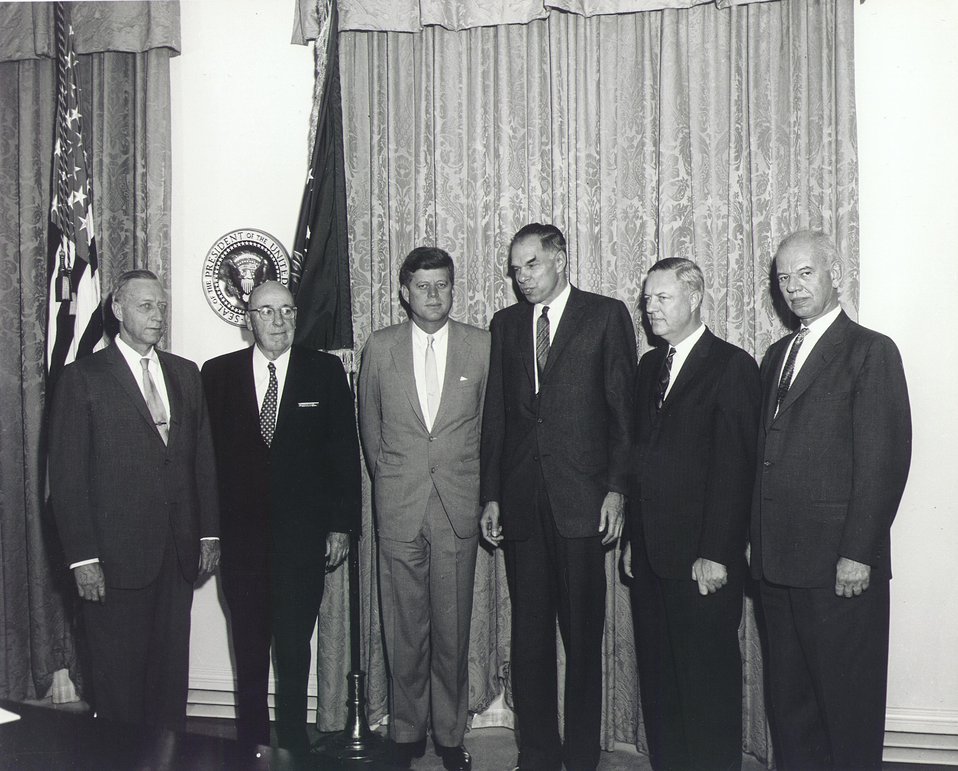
Fermi Award Ceremony for Dr. Bethe in Washington on Dec. 1, 1961.